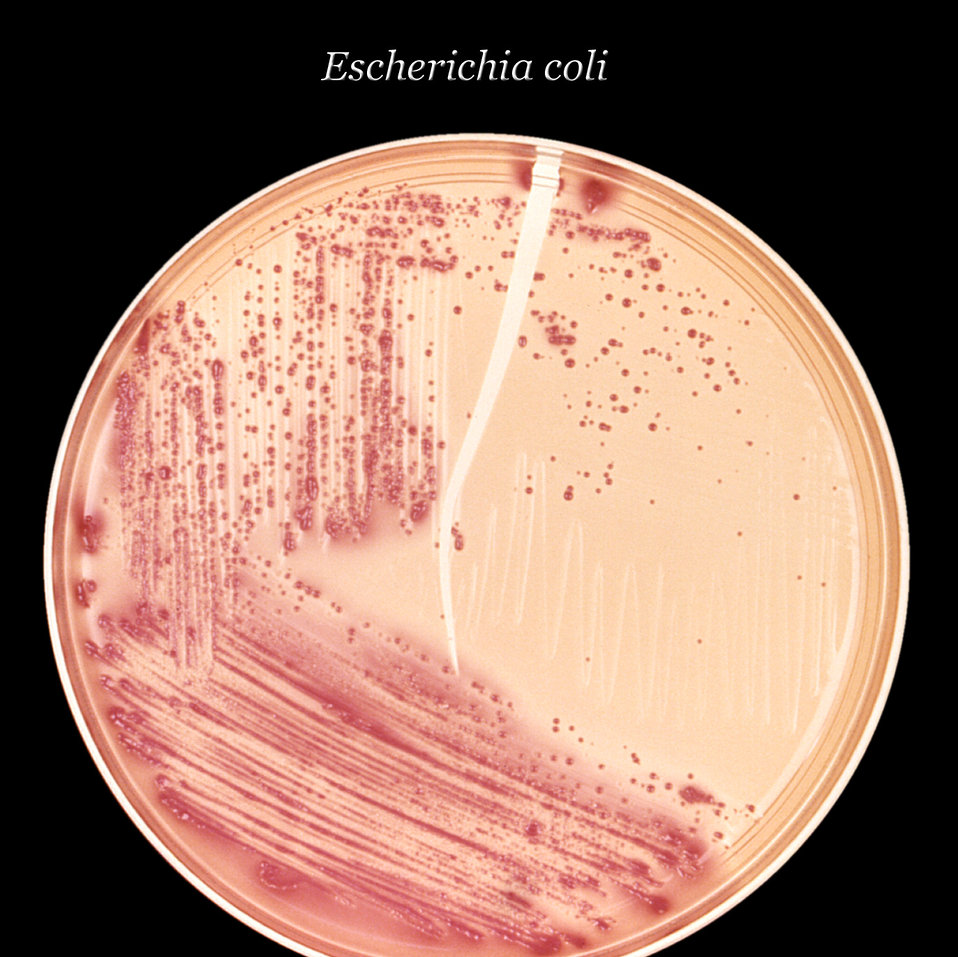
After 24 hours, this inoculated MacConkey agar culture plate cultivated colonial growth of Gram-negative Escherichia coli bacteria.